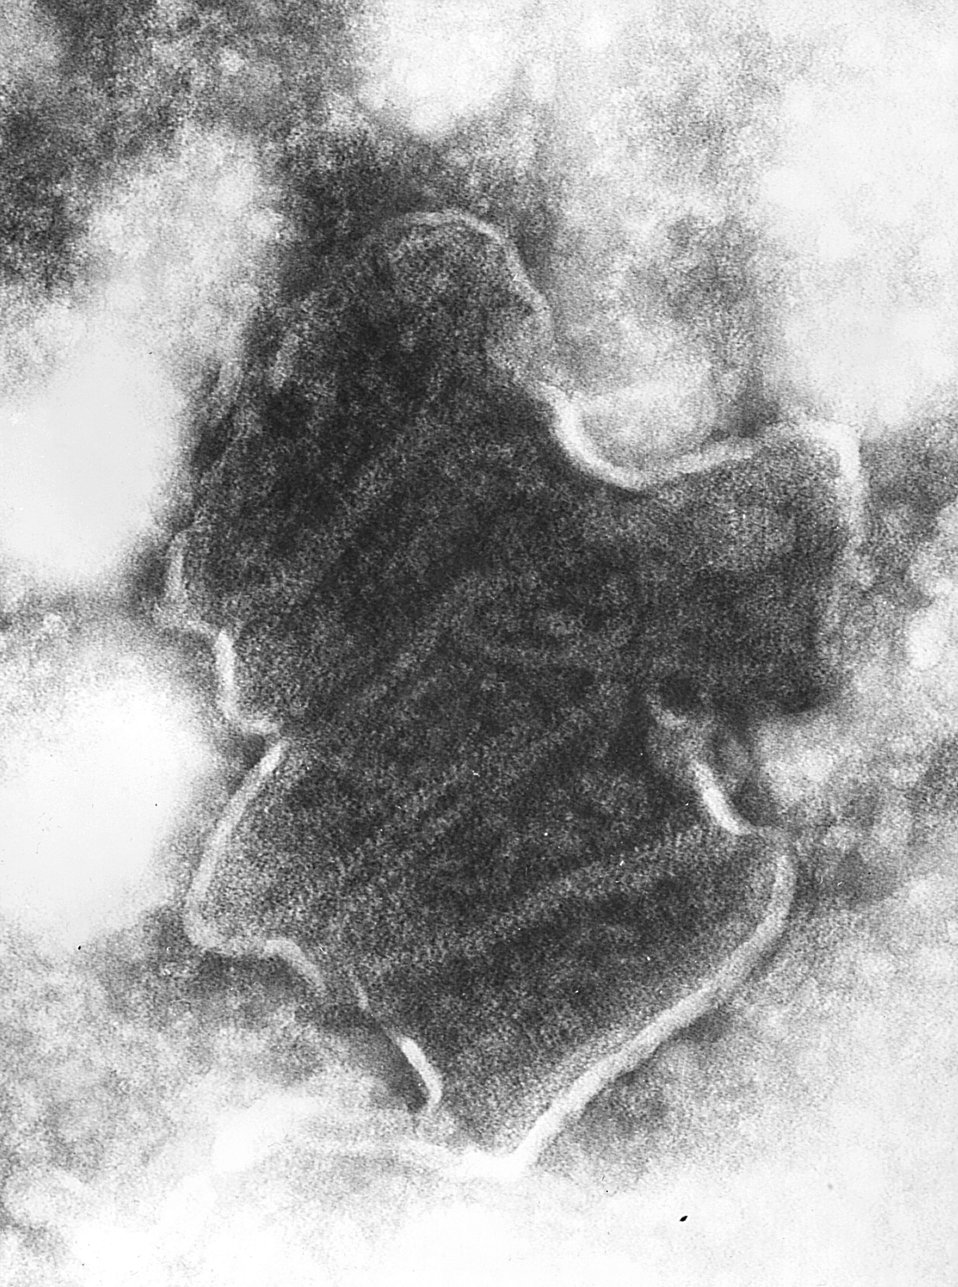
This negatively-stained transmission electron micrograph (TEM) revealed the presence of numerous bovine ephemeral fever virus virions, which are members of the Rhabdoviridae family of viruses, and the genus Ephemerovirus, infecting animals as well as plants.